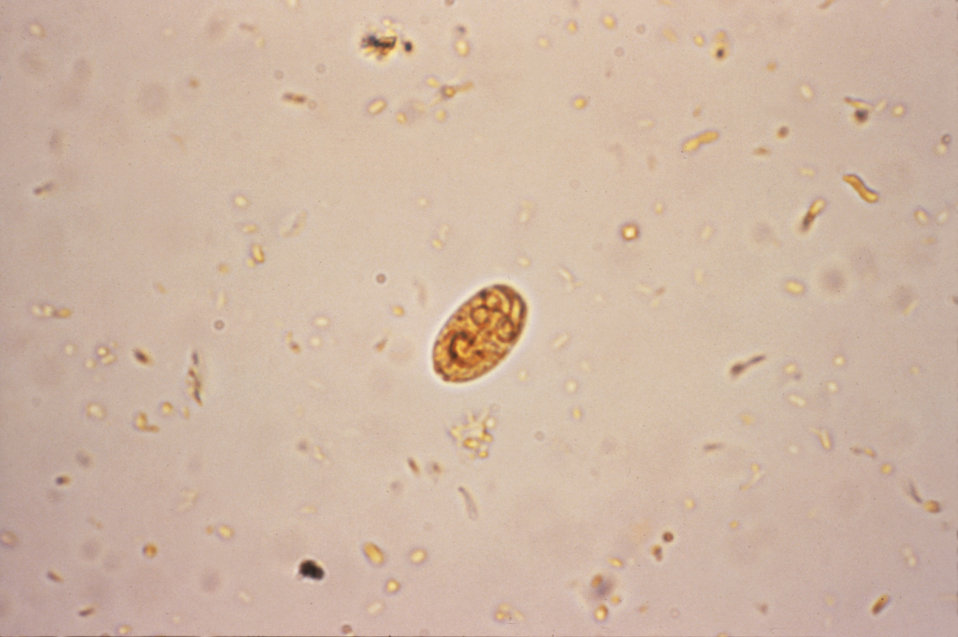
A photomicrograph of a Giardia lamblia cyst enhanced using an Iodine stain.